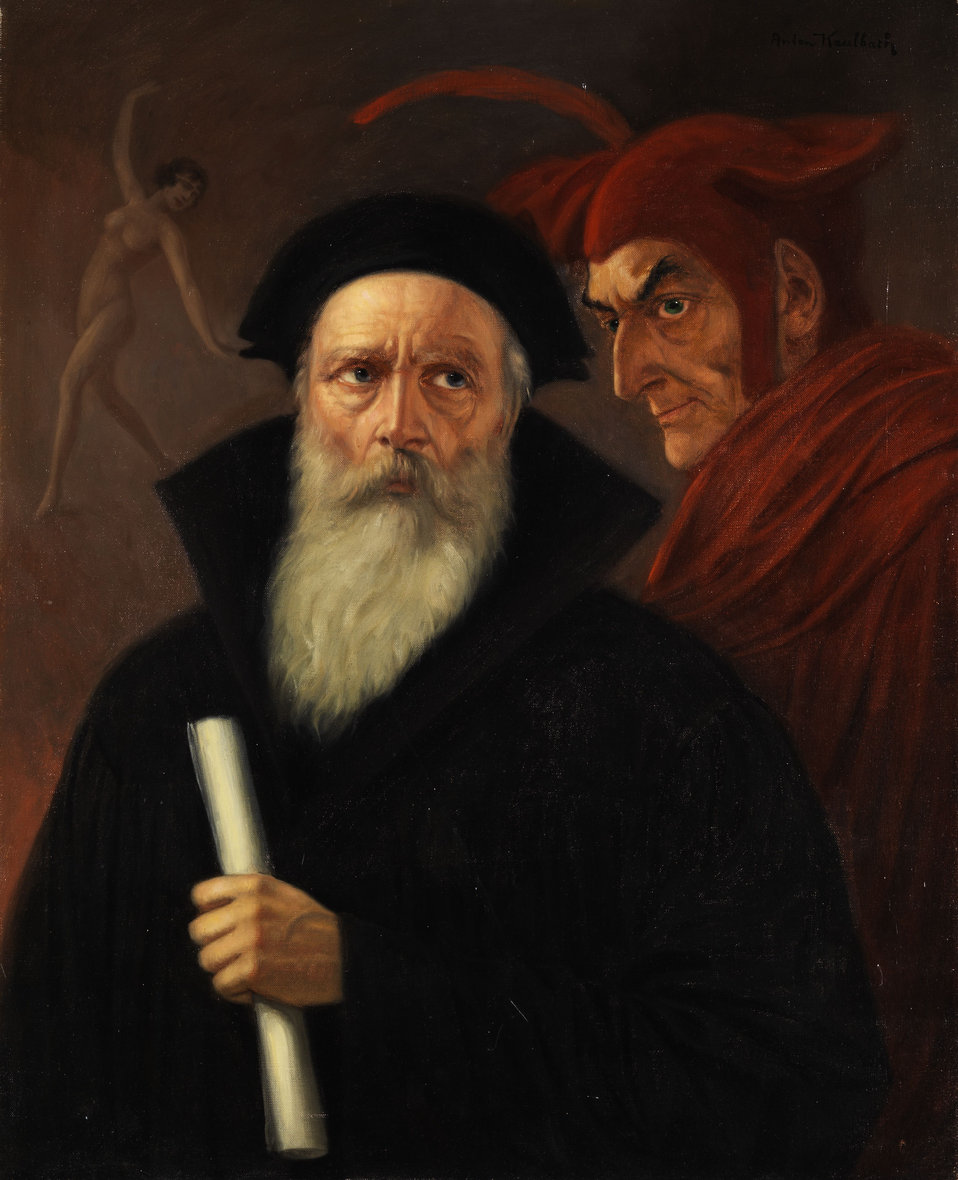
Faust und Mephisto. Öl auf Leinwand. 80 x 65 cm. Rechts oben signiert.